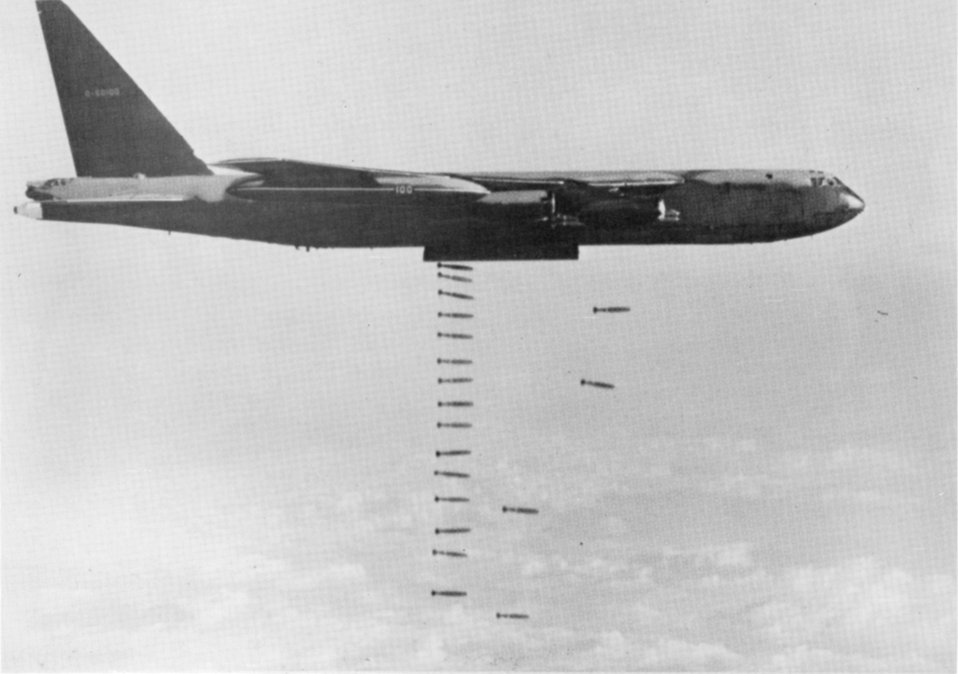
Combat-ready for 50 years

A B-52D Stratofortress from the 93rd Bombardment Wing at Castle Air Force Base, Calif., drops bombs. B-52Ds were modified in 1966 to carry 108, 500-lb bombs while the normal conventional payload before was only 51.